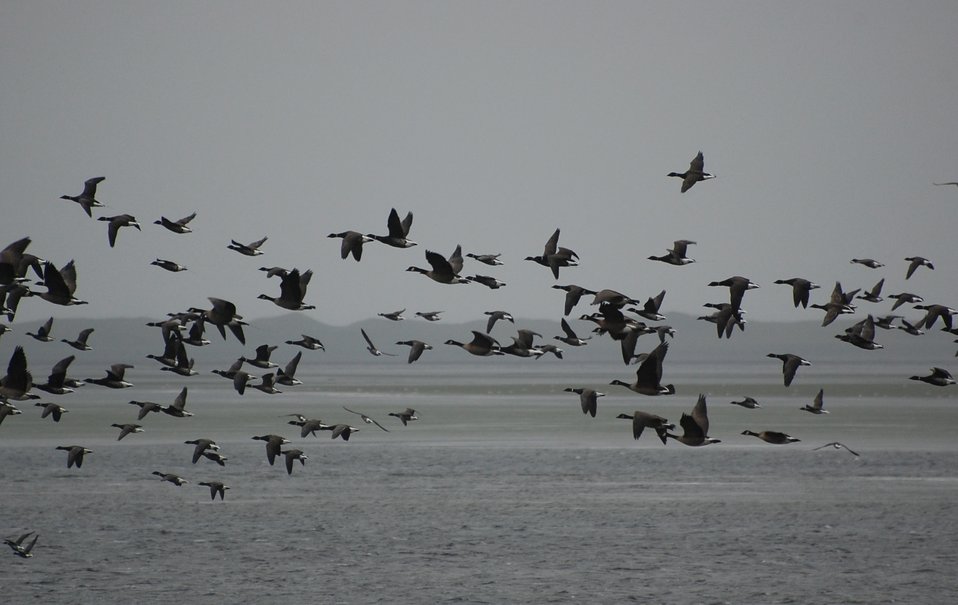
Brant at Izembek Lagoon

Izembek National Wildlife Refuge